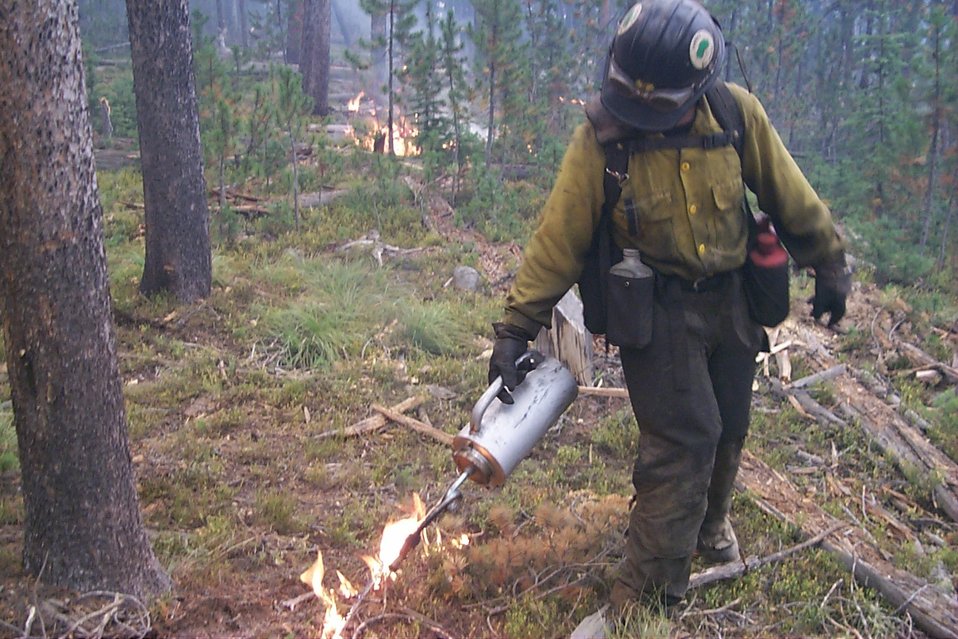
Controlled burn Fire Clearwater Fire Salmon Field Office USRD Upper Snake River District